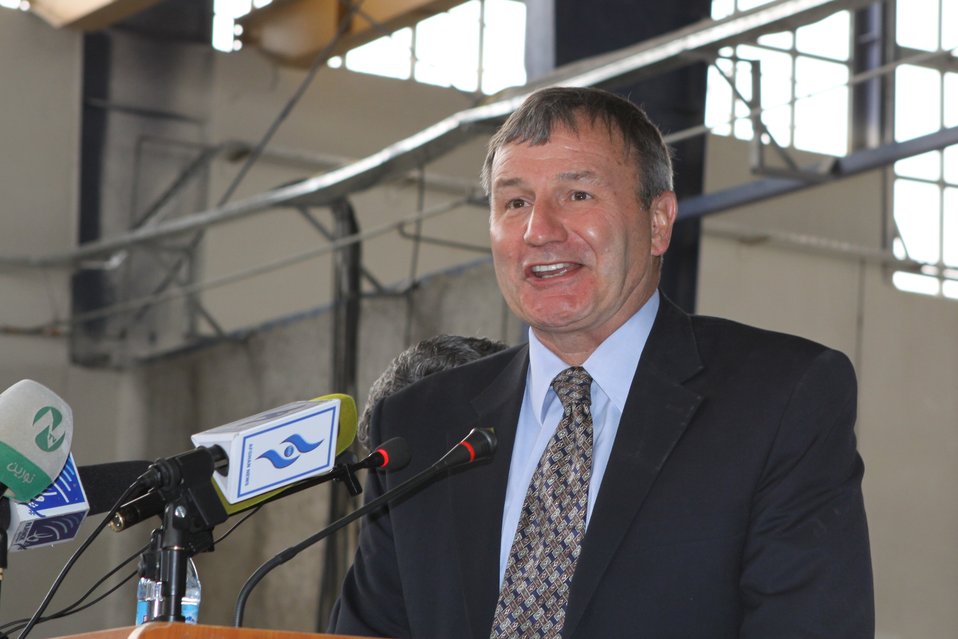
100525 Hirat Marble Conference 211